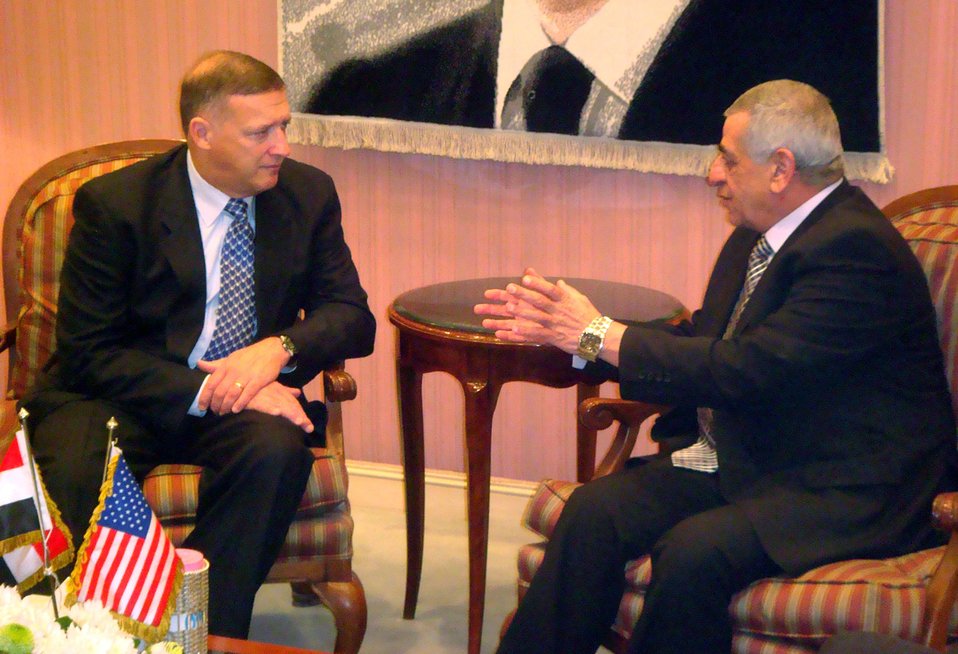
CENTAF commander meets with key officials in Egypt

Lt. Gen. Gary North, U.S. Central Command Air Forces commander, and Air Marshal Magdi Sharawi, Egyptian Air Forces Commander-in-Chief, continue discussions Jan. 29.